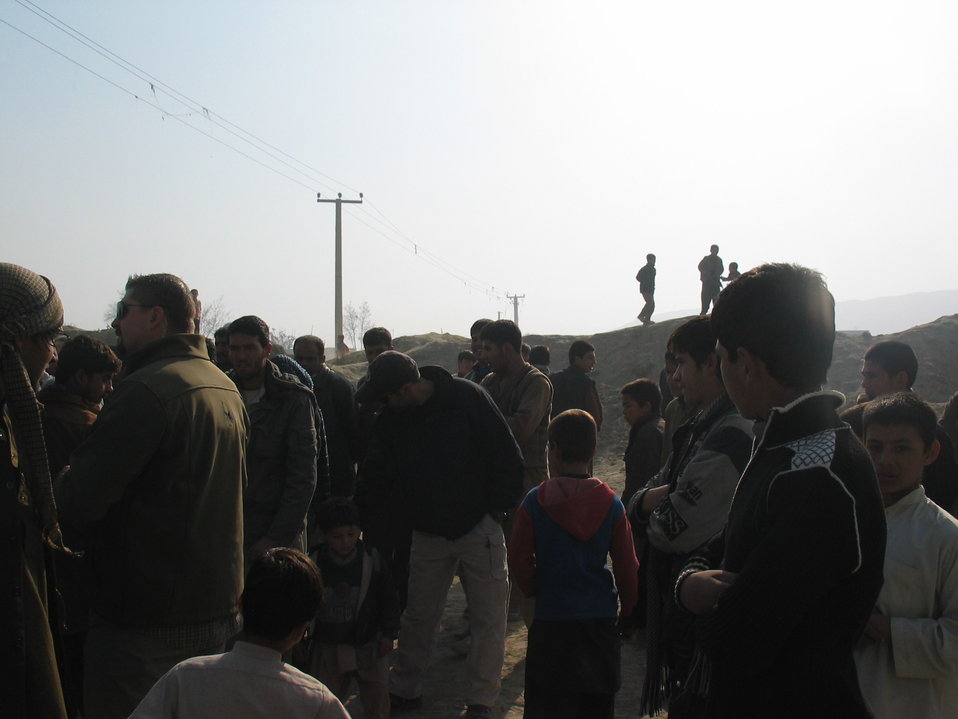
Kabul River Bridge Renovation, December 3, 2010